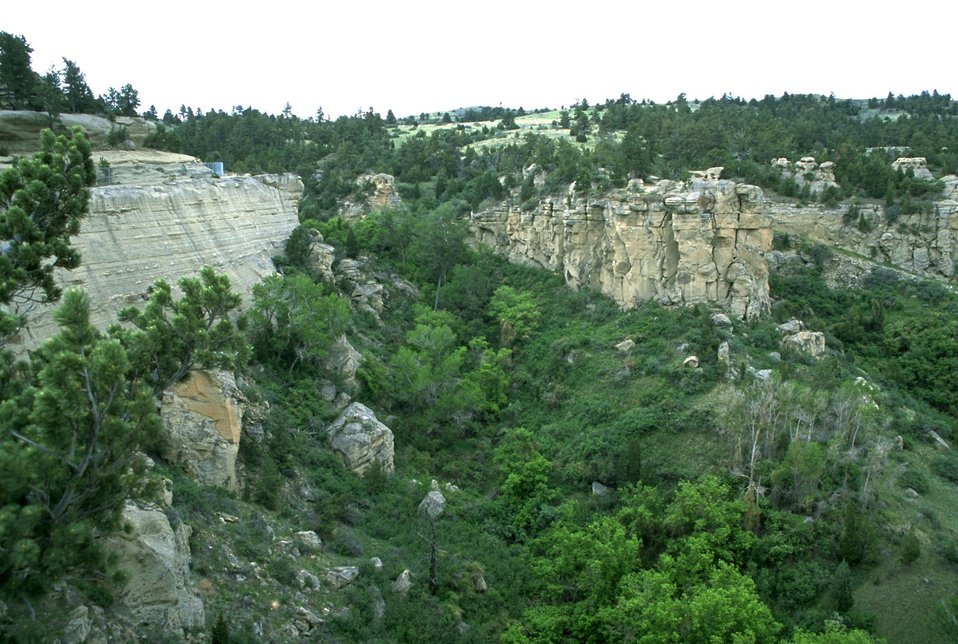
The rimrocks south of Billings MT above the Yellowstone River